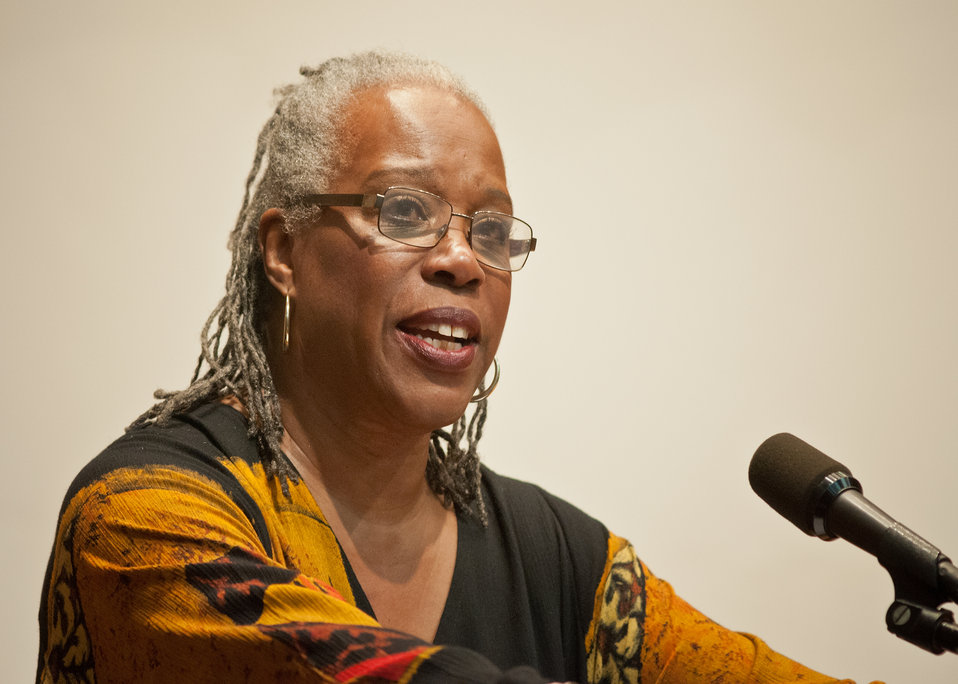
Audrey Rowe, Administrator, Food and Nutrition Service introduced Tim Reid, Actor, Comedian, Filmmaker and Social Activist at the United States Department of Agriculture Black History Month celebration “Black Women in American Culture and History” in Washington, D.C. on Thursday, February 16, 2012.